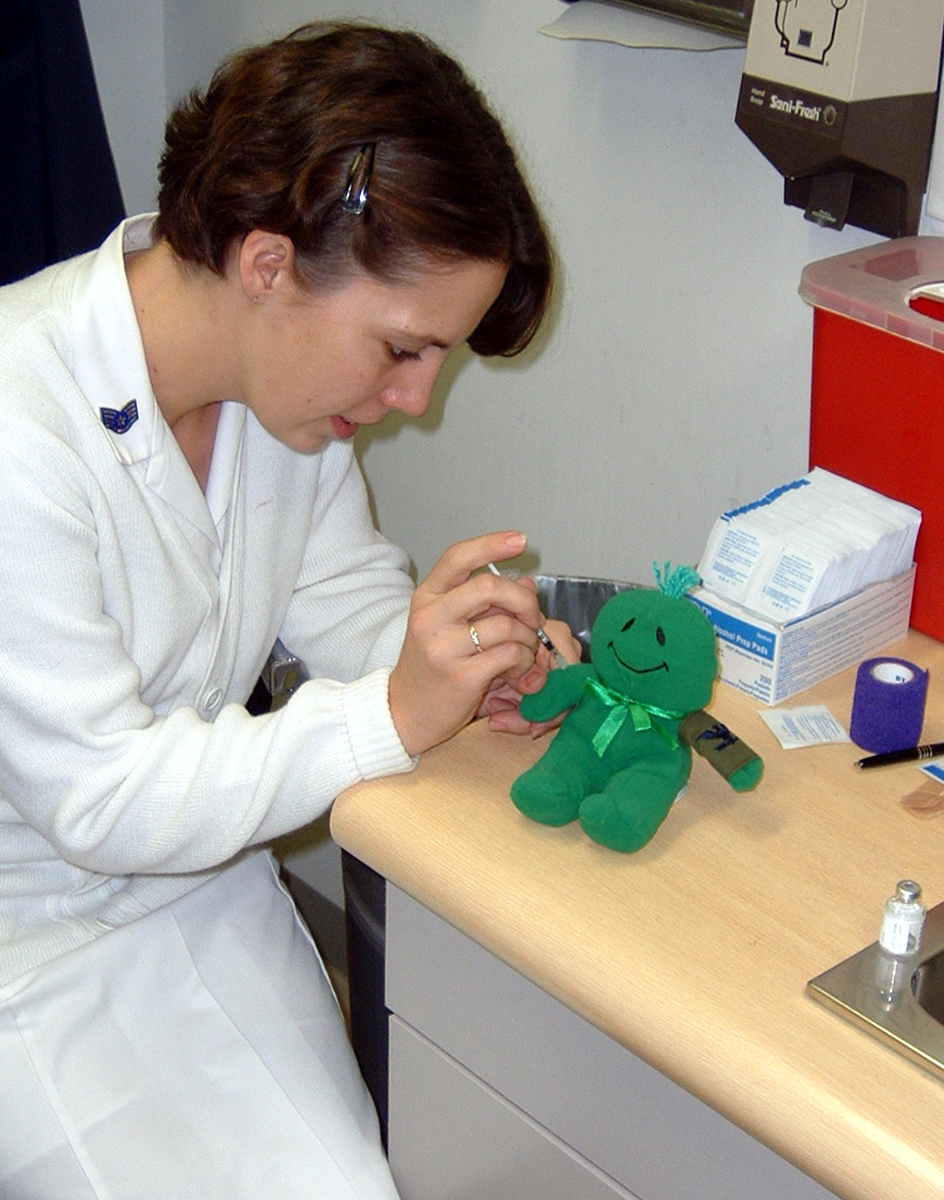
Fit to deploy

MISAWA AIR BASE, Japan -- Staff Sgt. Rebekah Virtue gives